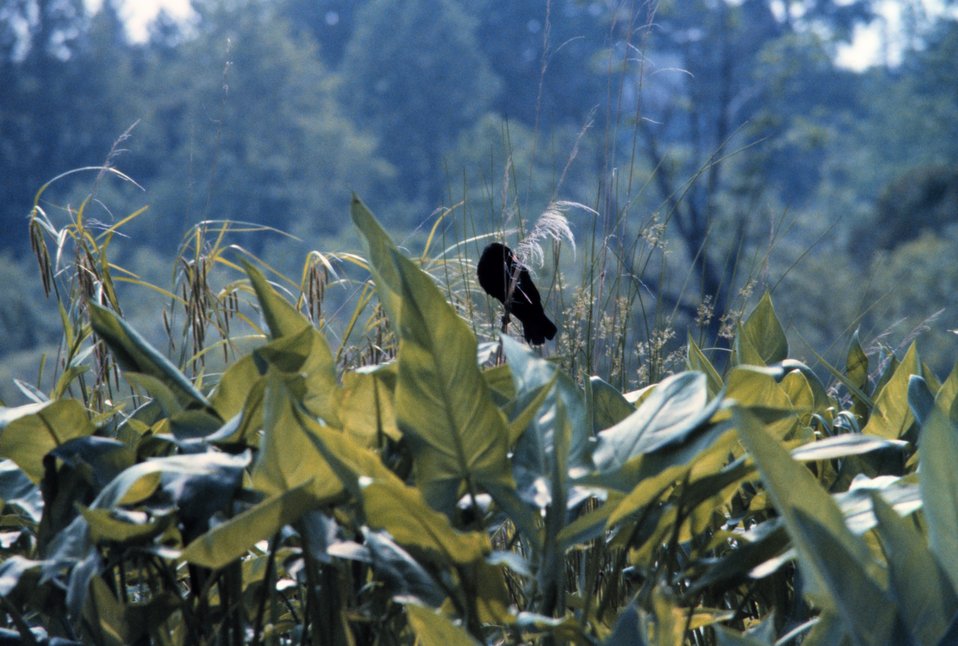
A redwing blackbird perching atop reeds in a Patuxent river marsh. Arrow arum plants are in the foreground.